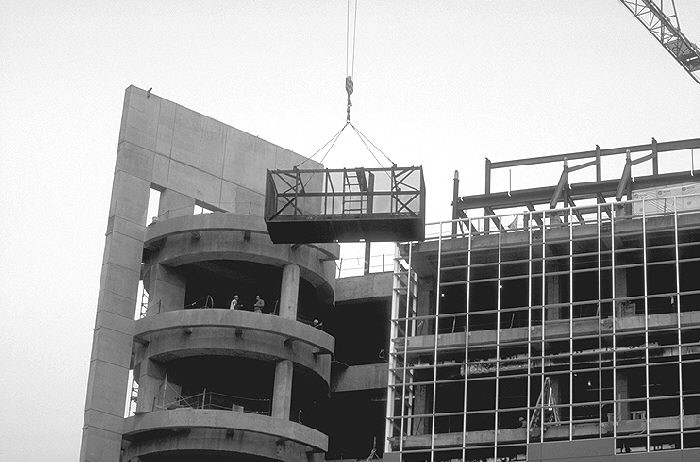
On the Centers for Disease Control's (CDC) Roybal Campus, located in metropolitan Atlanta, Georgia, this March, 1999 image depicts the intermediate phases of construction of Building 17.